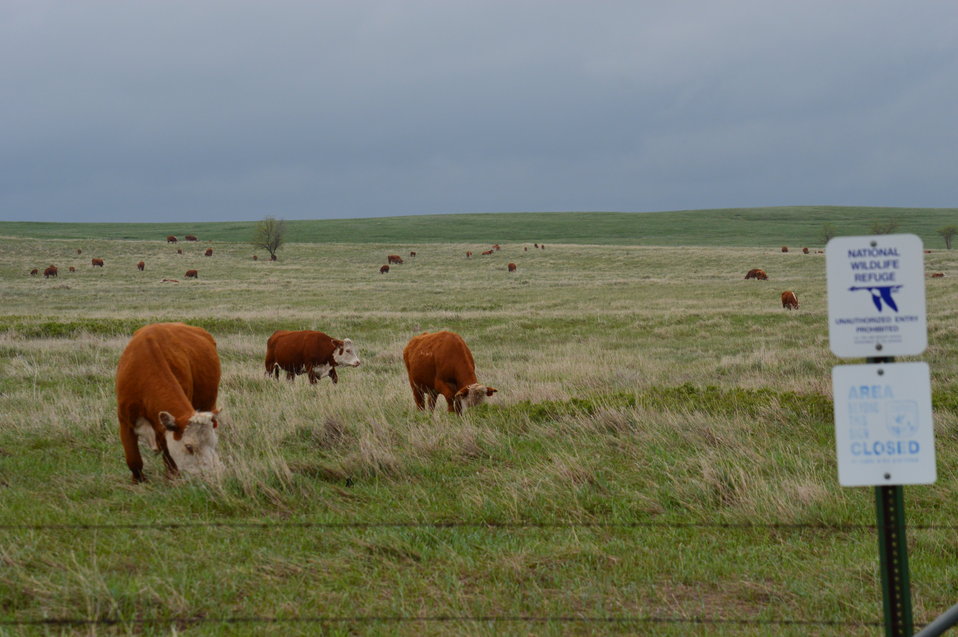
Cattle on the prairie

Scenery and wildlife at Lake Ilo National Wildlife Refuge in North Dakota